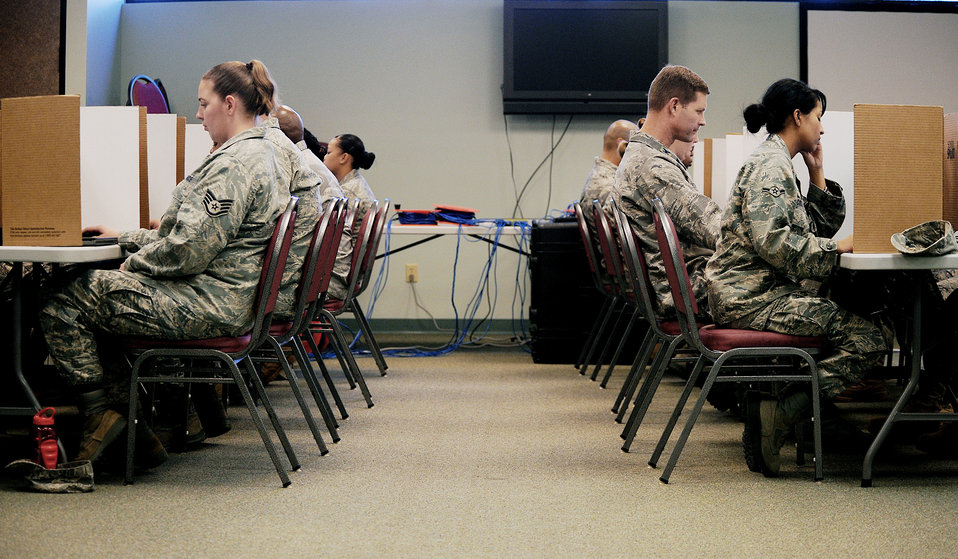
Army mobility team visits Moody, conducts metrics test

Airmen test their memory skills during a portion of the Automated Neuropsychological Assessment Metrics test Nov. 5, 2009, at Moody Air Force Base, Ga. An Army team visited Moody AFB to help conduct a mass ANAM testing for more than 800 Airmen. The test, which establishes a baseline for an individual's brain activity, is mandatory prior to deploying.